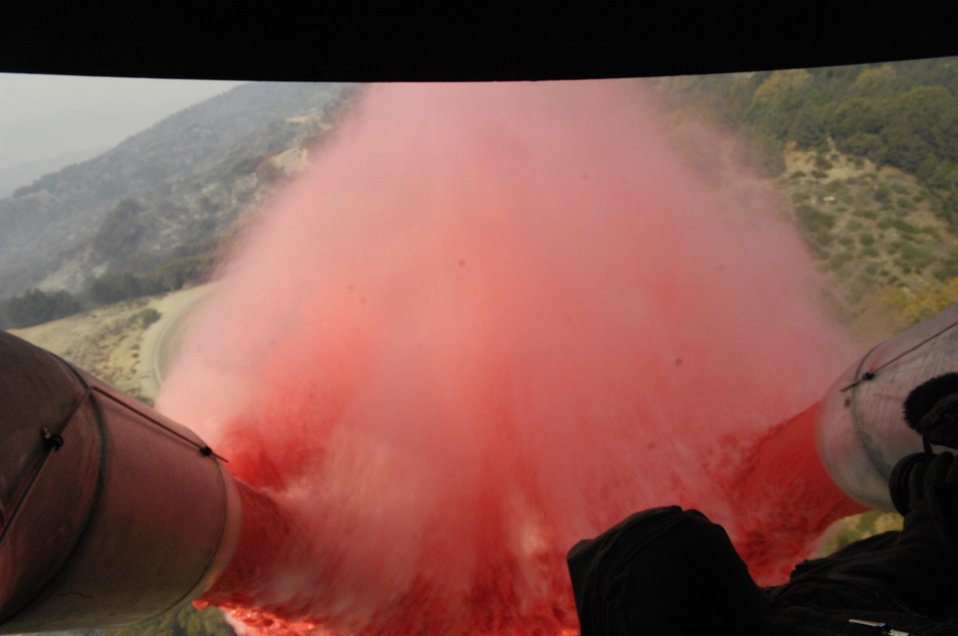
Guard, Reserve aid in California firefighting efforts

Approximately 3,000 gallons of fire retardant is deployed Oct. 25 over the Poomacha fire in North San Diego County, Calif. The C-130 Hercules and crew are assigned to the 302nd Airlift Wing from Peterson Air Force Base, Colo. The aircraft launched from Channel Islands Air National Guard Station, Calif.